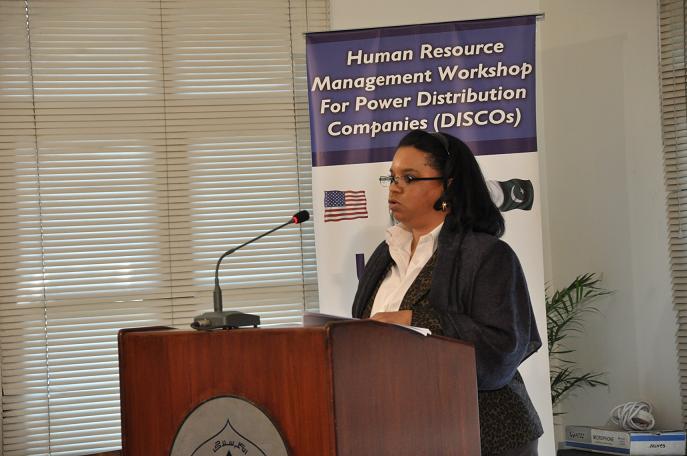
Ms. Gail Spence ( deputy Director USAID Punjab)